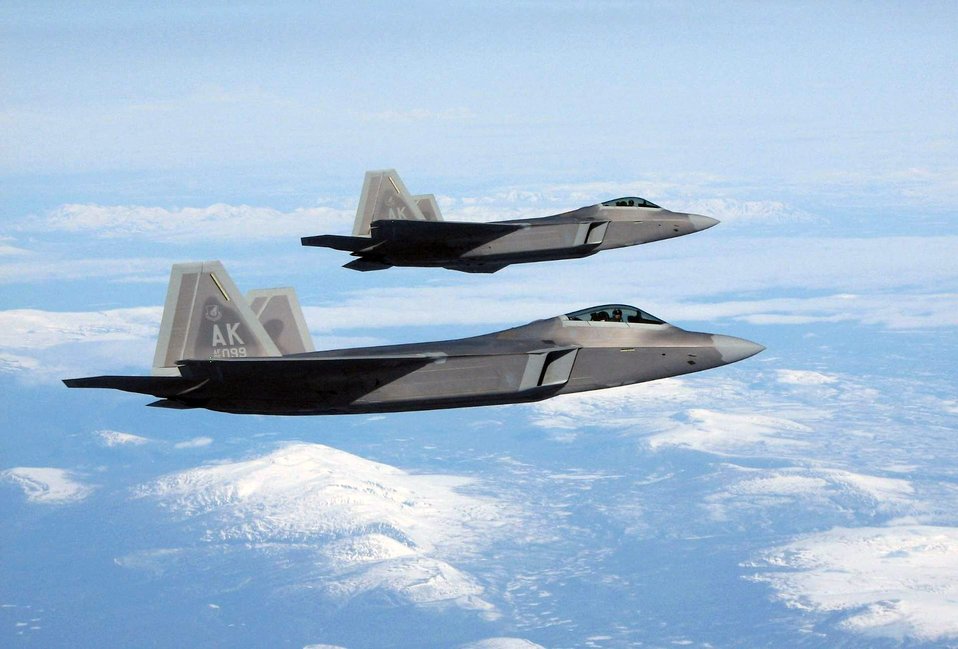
Alaska ANG support key to Northern Edge success

Two F-22 Raptors from the 3rd Wing at Elmendorf Air Force Base, Alaska, fly beside a KC-135 Stratotanker May 8 prior to refueling. The aircraft are part of the more than 120 participating in Northern Edge 2008, the largest military training exercise in Alaska. Aircrews train in counter-air, close-air-support and air-interdiction missions. An Alaska Air National Guard KC-135 from Eielson Air Force Base's 168th Air Refueling Wing, delivered the fuel during the mission.